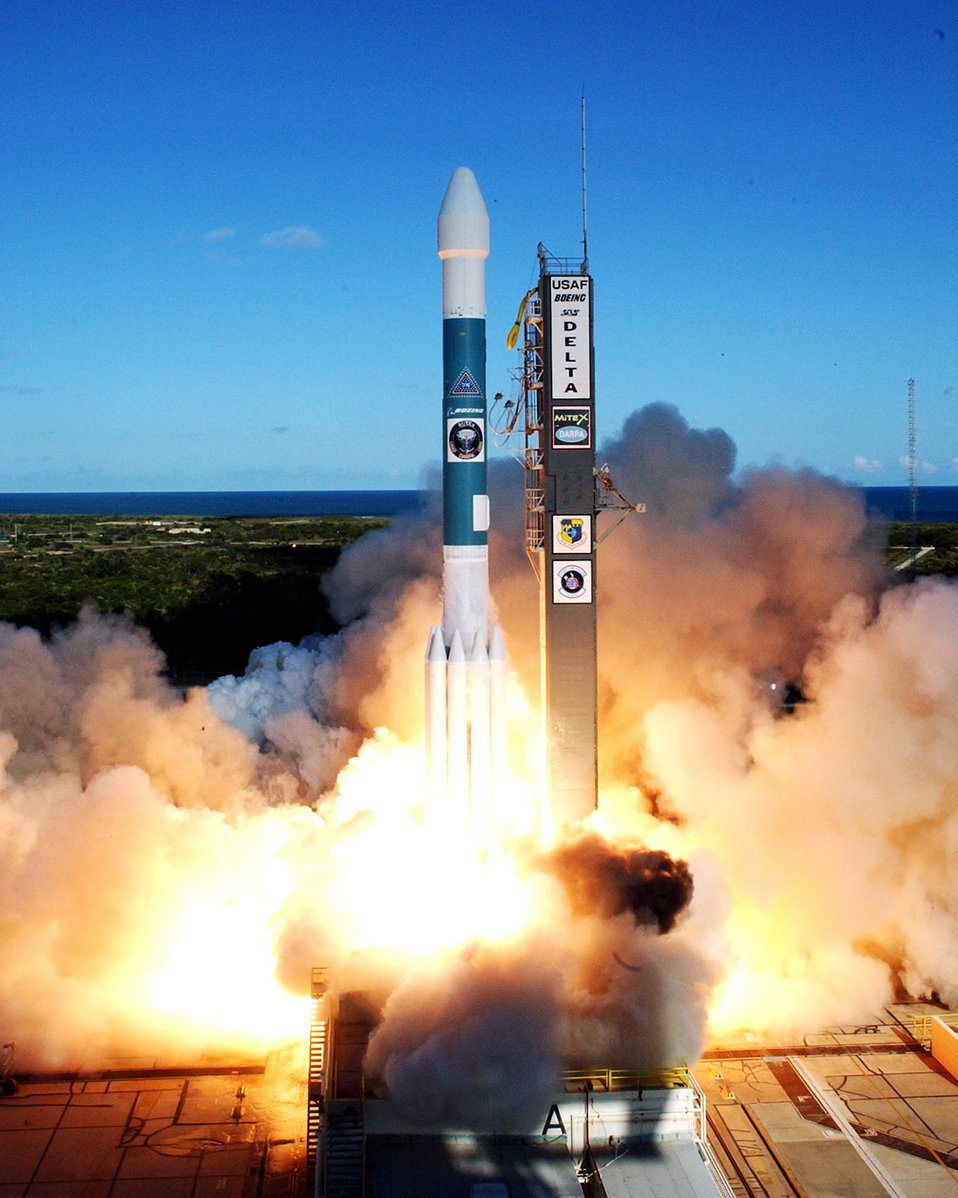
Delta II

A joint government-industry team launched a Delta II rocket at Cape Canaveral Air Force Station, Fla., on Wednesday, June 21. The payload was a Micro-satellite Technology Experiment designed to support and enhance future U.S. space operations.